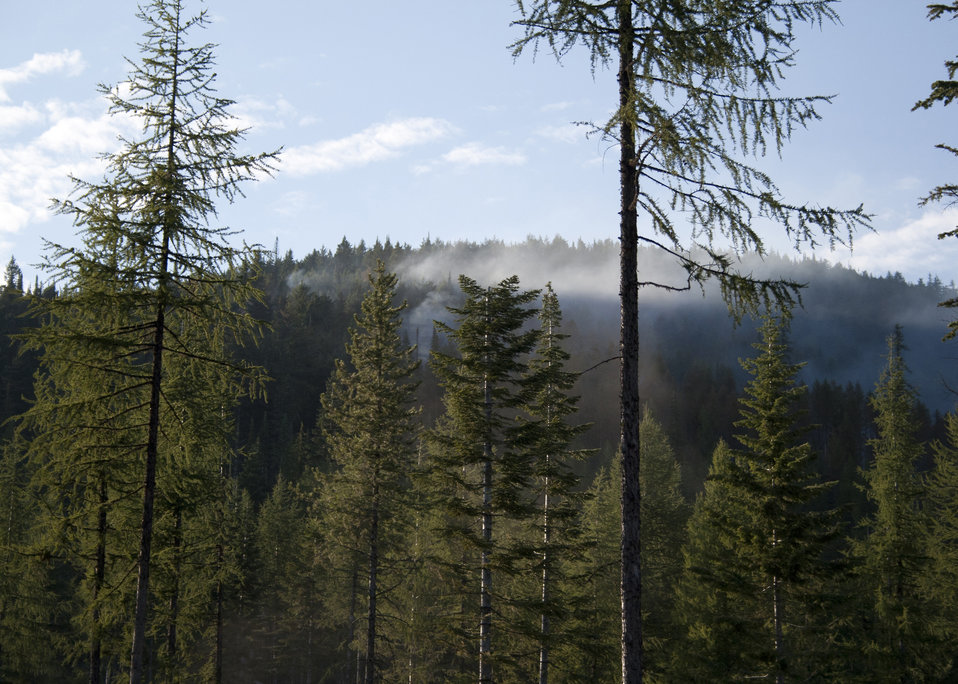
Firefighters supported by three fire engines, two helicopters, two water tenders, a dozer and an air tanker battled to contain the 90 acre Rogers Fire located on Mt. Rogers five miles west of Aladdin, WA on the Colville National Forest. Firefighters worked under adverse conditions with steep terrain and gusting winds to reduce the loss of timber and protect the Rogers Mountain Trail. The Rogers Fire began on Aug. 9, 2011 and was controlled by Aug. 19, 2011 with mop up crews ensuring that no flare-ups occurred. Colville National Forest has 1.1 million acres in northeastern Washington and includes the Kettle River, Selkirk Mountain ranges, and the upper reaches of the Columbia River.